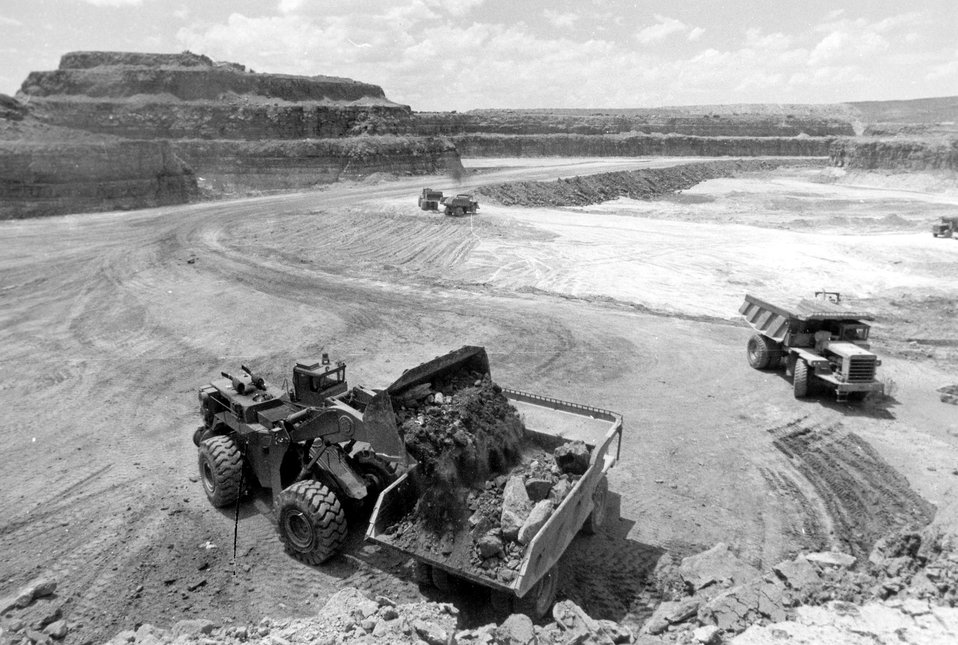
The front end loader is moving lower grade uranium ore into a dump truck. c. undated